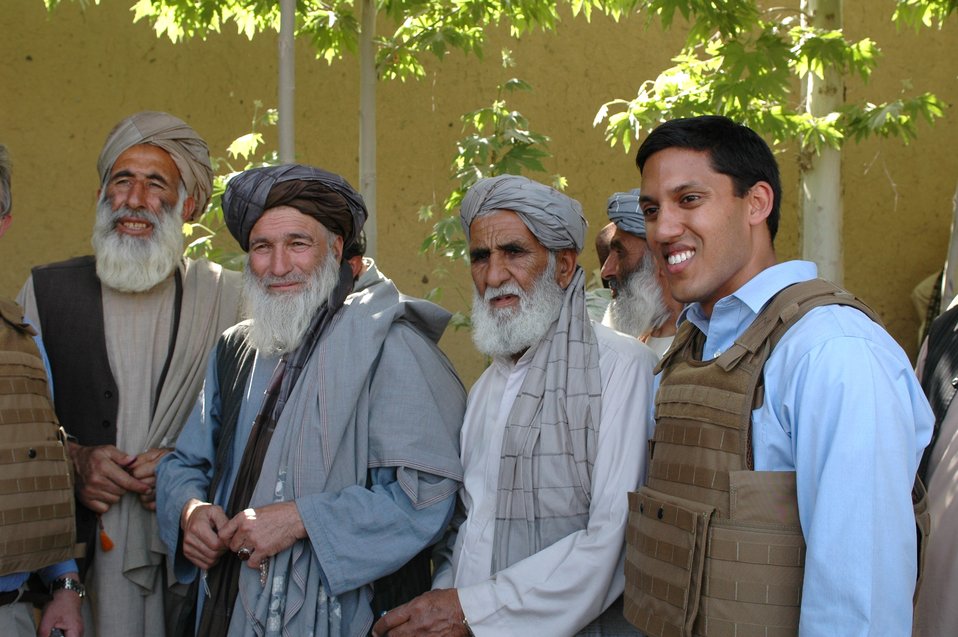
Dr Shah Visits Argandab April 10, 2010